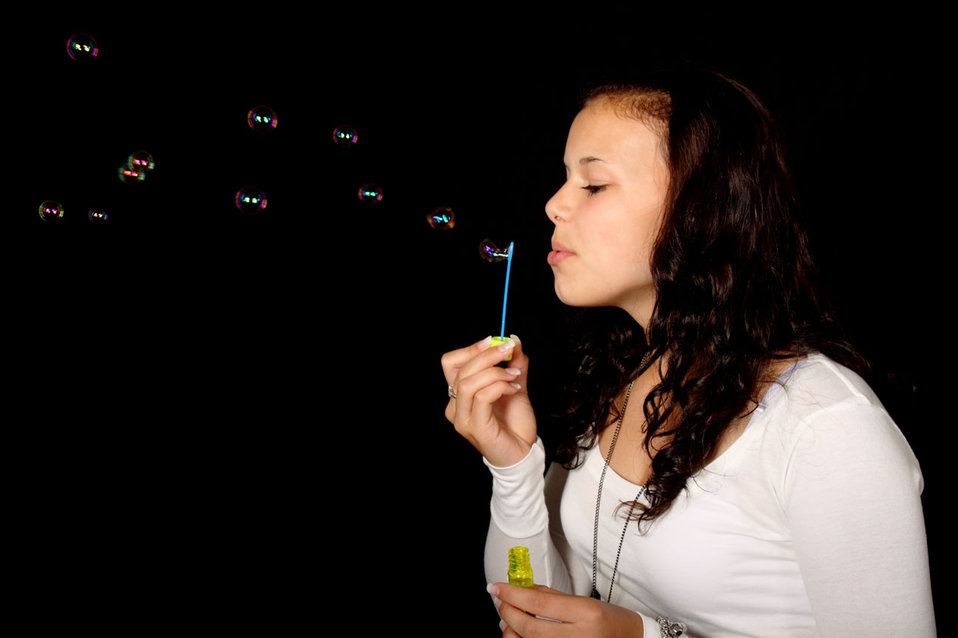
Girl blowing bubbles

Young woman blowing bubbles on black background.